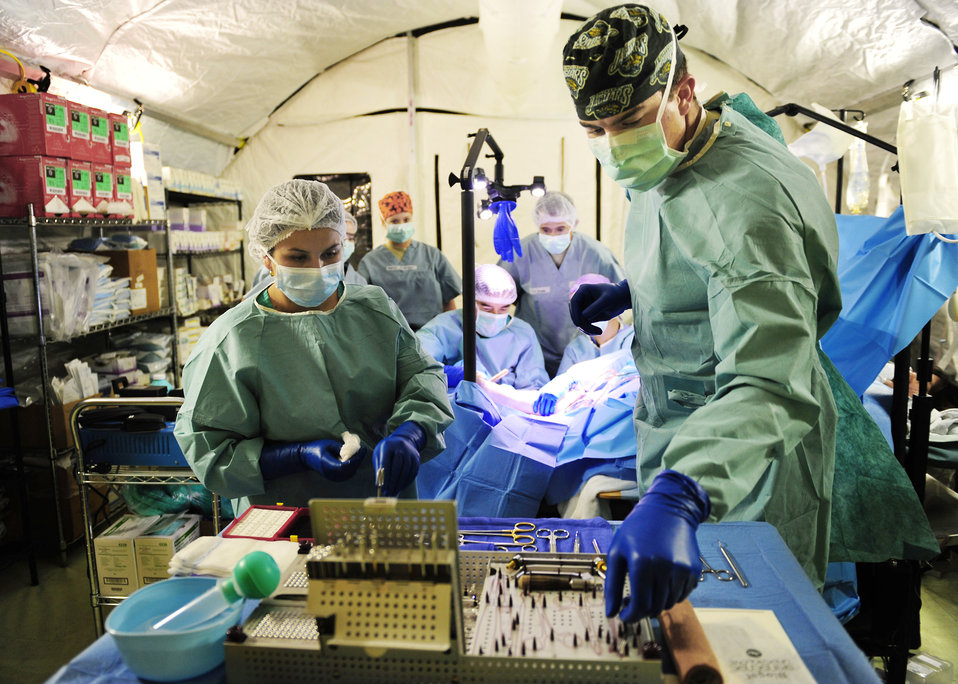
Airmen, Chileans treat patients at new expeditionary hospital

A Chilean surgical technician and Senior Airman Alexander Balock reach for instruments during the first surgery at the expeditionary medical hospital March 15, 2010, in Angol, Chile. The local hospital in Angol, a city southeast of Conception, Chile, was deemed structurally unsound as a result of an 8.8-magnitude earthquake Feb. 27. With the nearest operation ward more than 40 miles away, and many other local hospitals overwhelmed with casualties following the earthquake, local Chilean officials requested assistance from U.S. forces to help with primary care capabilities. Airman Balock is a surgical technician from the 81st Medical Surgical Squadron at Keesler Air Force Base, Miss.